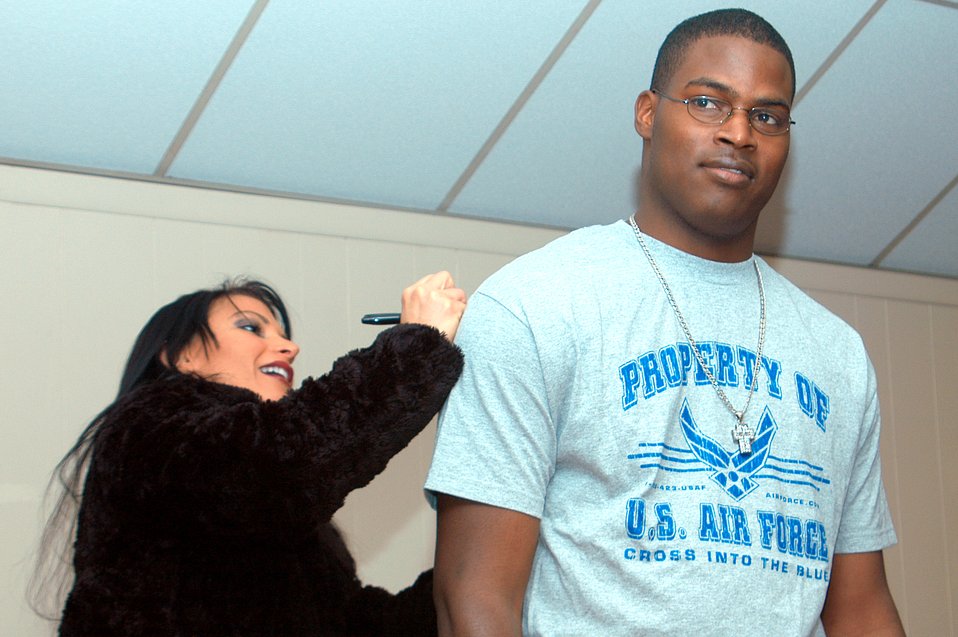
Professional wrestlers thank Dyess Airmen for service

ABILENE, Texas -- World Wrestling Entertainment professional wrestler Victoria signs the back of Airman 1st Class Fred Stewart's shirt. Airman Stewart was one of several Dyess Dyess Airmen who recently returned from deployments that were selected to meet with the wrestlers here Jan. 21.